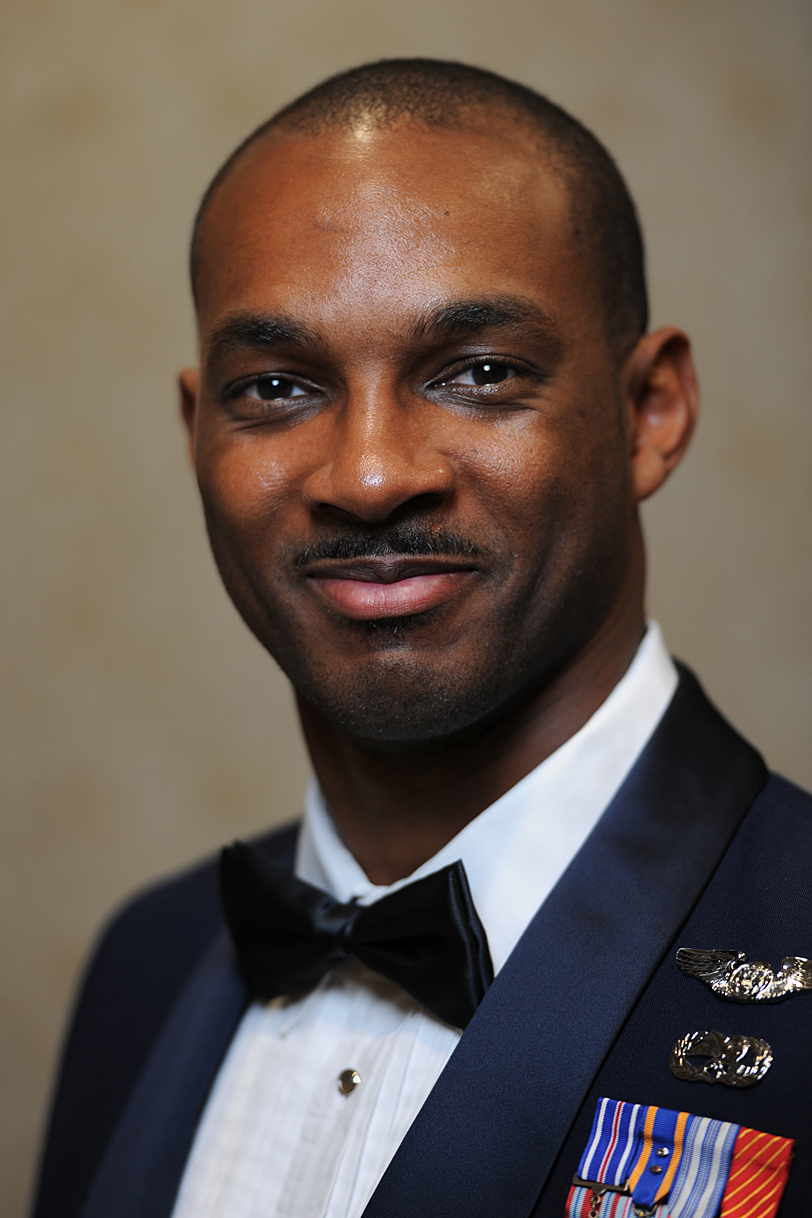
White House honors Iraq veterans

Staff Sgt. J.H. Smith represented the state of Georgia during a special White House dinner honoring service members from all 50 states and territories for their service in Iraq.